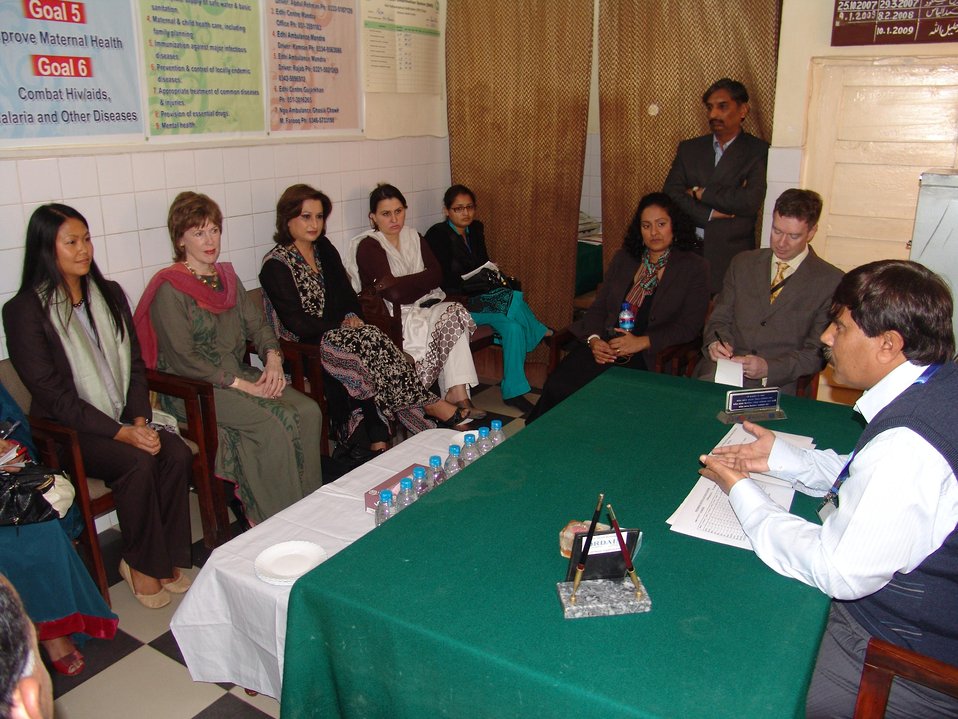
Rural Health Center Care for Mothers and Newborn Children

Gujar Khan, March 6, 2012 – Dr. Marilyn Wyatt, wife of U.S. Ambassador Cameron Munter talking with healthcare workers.